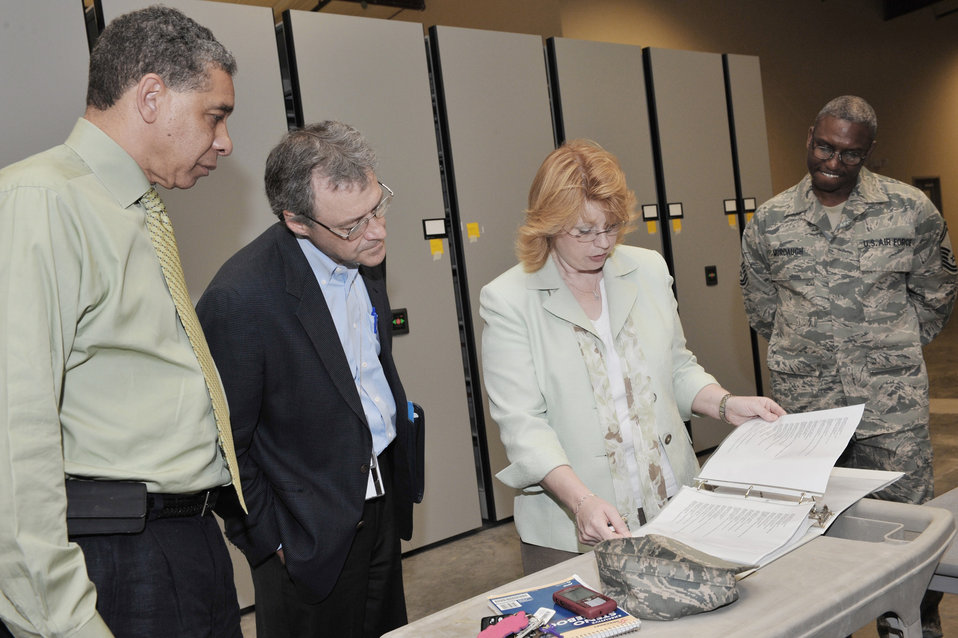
'One of a kind' war records staging facility gets Air Force, national review

Jerry Phillips (left to right) , Rich Noble, Penny Sayle and Senior Master Sgt. Darin Murdaugh visit a recently renovated war record storage facility July 1 at Shaw Air Force Base, S. C. Mr. Phillips is the Air Combat Command command records manager. Mr. Noble is the archives specialist for the National Archive and Records Administration. Ms. Sayle is an Air Force records officer. Sergeant Murdaugh is the U.S. Air Forces Central Command 3A functional manager.